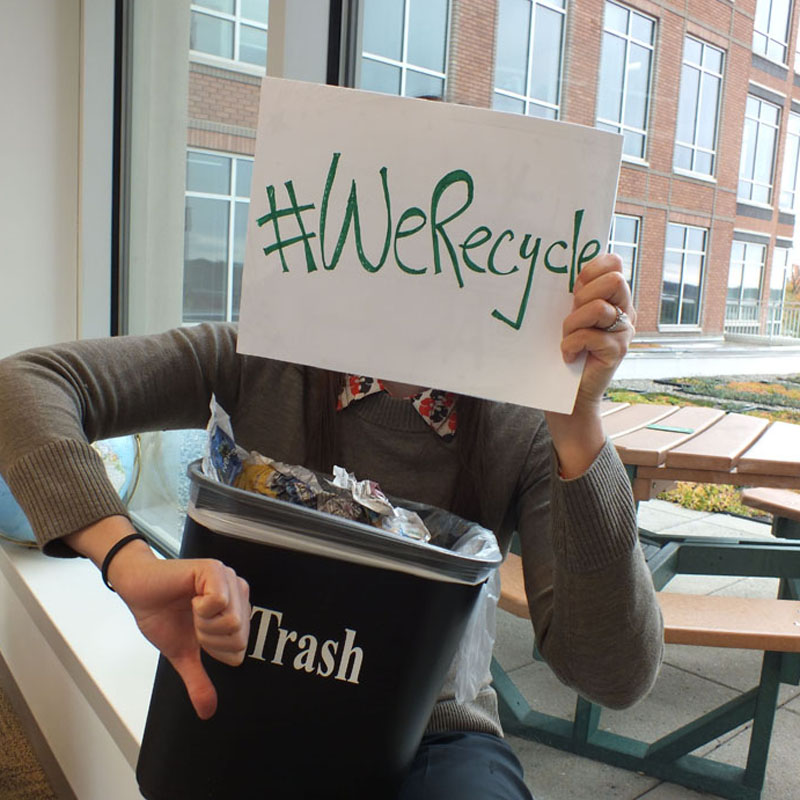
EPA Employees Kristen Recycles

At EPA, #WeRecycle. Learn how you can too: www2.epa.gov/recycle